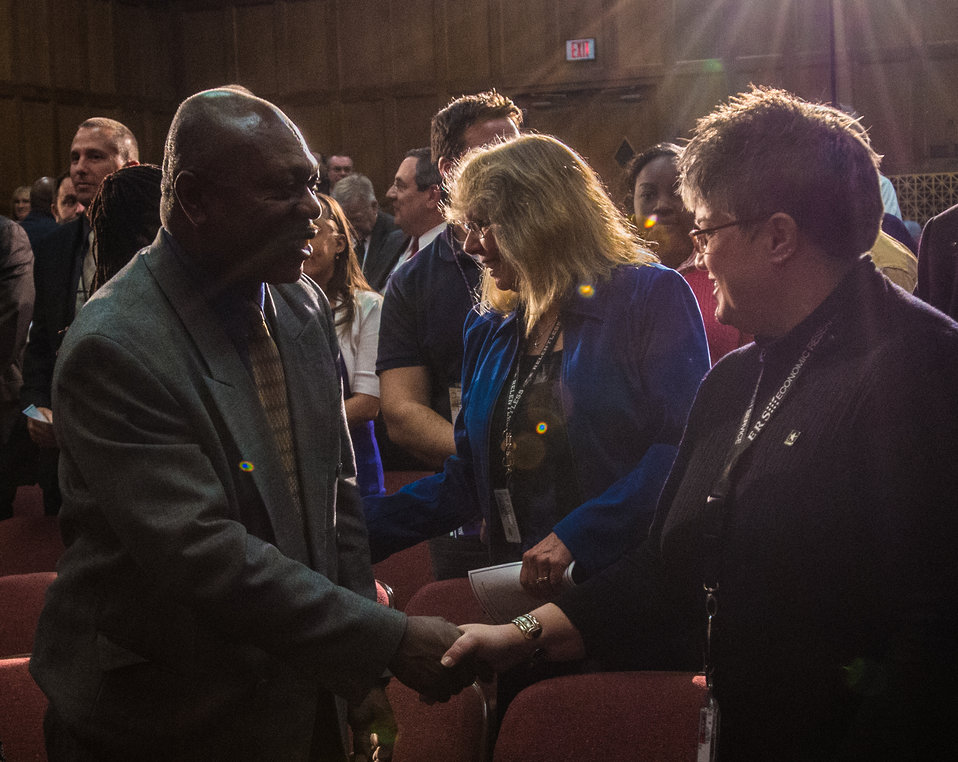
U.S. Department of Agriculture (USDA) civilian workforce are asked to stand and shake the hand of those who have served, or are serving in a Uniformed Armed Service, during the 2013 USDA Veterans’ Day Observance, whose theme is “VALOR, COURAGE, SACRIFICE – HONORING ALL WHO SERVED,” in Washington, DC, on Wednesday, November 20, 2013.